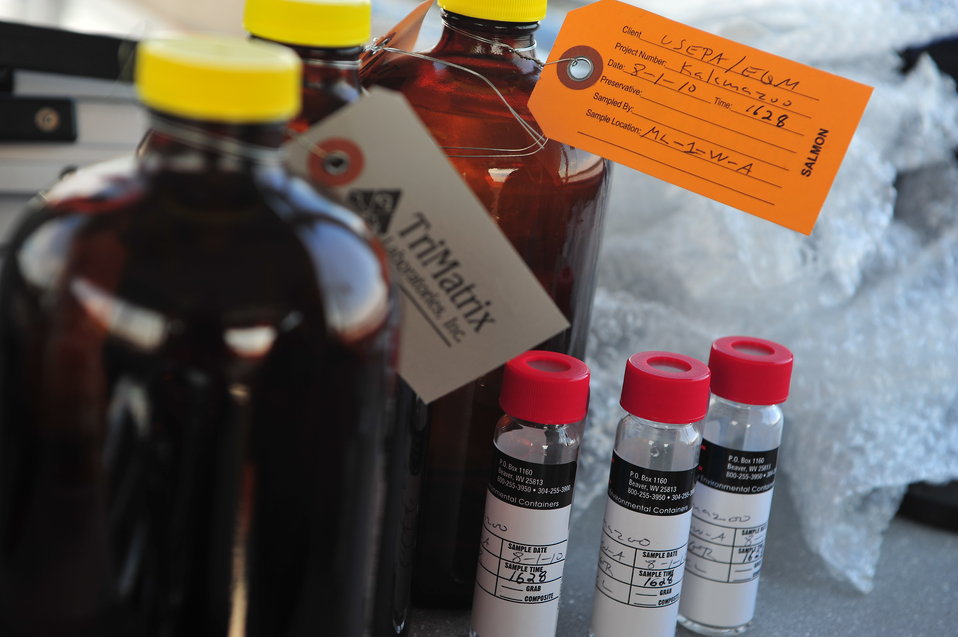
EPA's response to the Enbridge oil spill

August 2, 2010 - Water and sediment sampling operations during Enbridge Spill Response on Morrow Lake near Battle Creek, Michigan from Mudpuppy II, EPA's news research vessel.